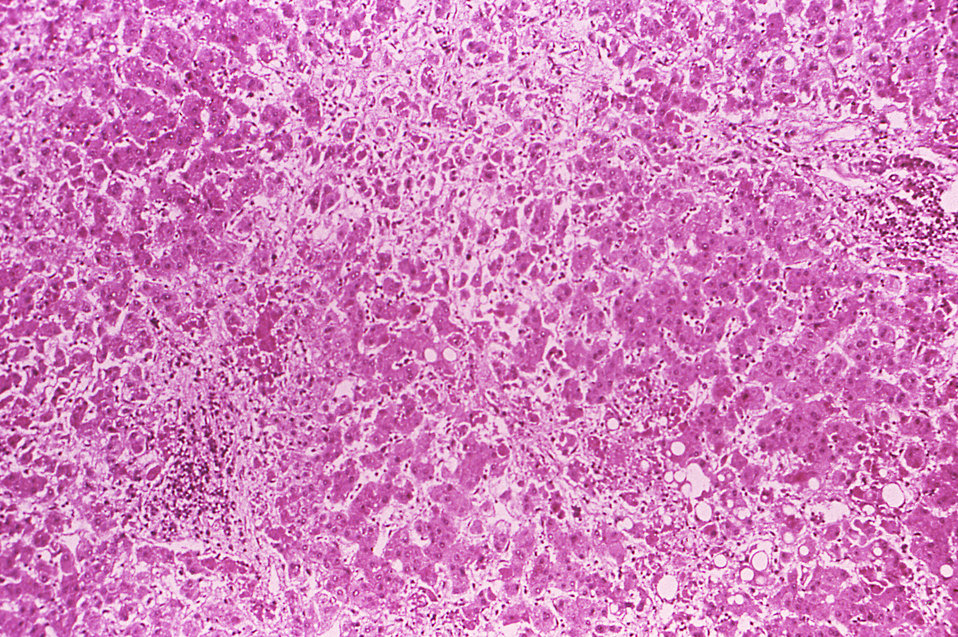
Under a low magnification of 80X, this hematoxylin-eosin-stained (H&E) photomicrograph depicts the cytoarchitectural changes found in a liver tissue specimen extracted from an Ebola disease patient in Zaire. This particular view reveals 'disseminated acidophilic necrosis, microvacuolar fatty degeneration, and a discrete histiolymphocytic infiltrate into the periportal space.'